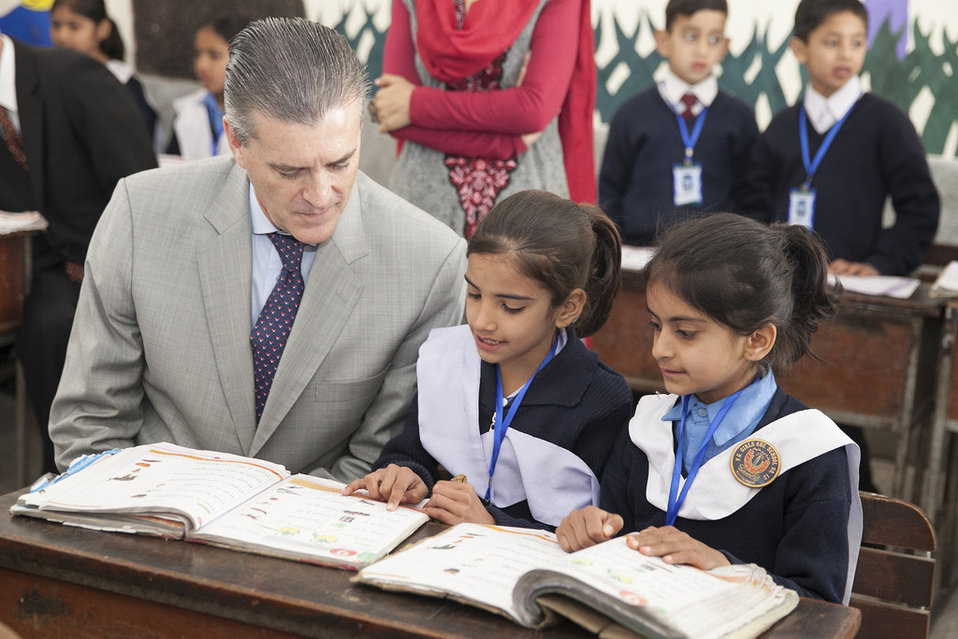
United States and Pakistan Launch the Pakistan Reading Project